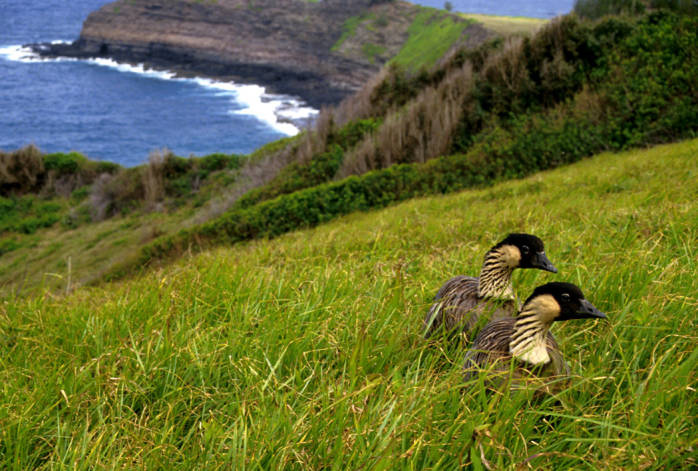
nene pair

endangered
The Hawaiian flightless goose nests at Kilauea Point National Wildlife Refuge, HI